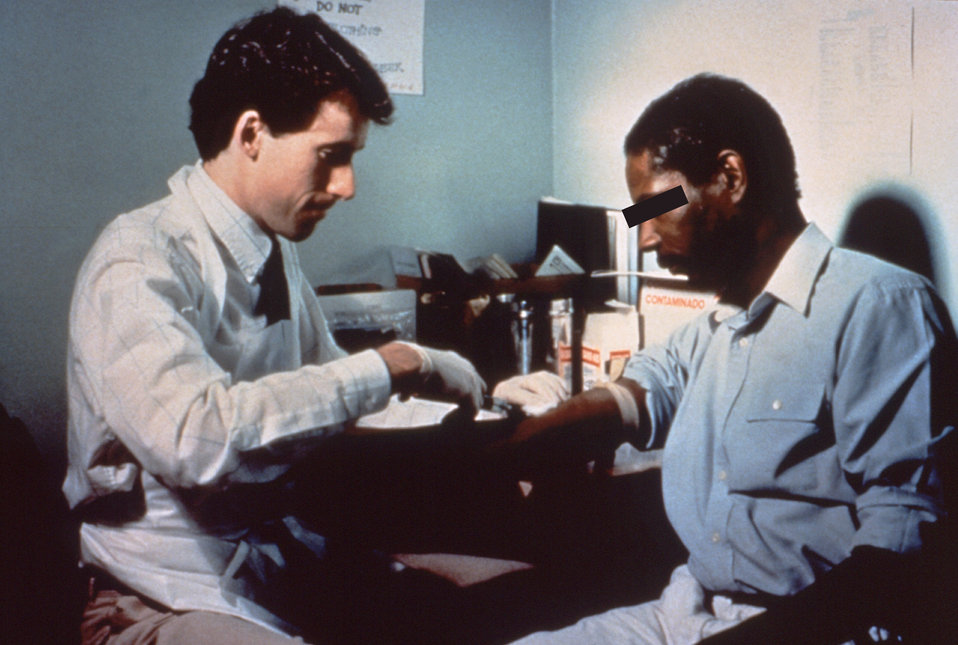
In this photograph, a CDC healthcare practitioner is examining a patient in a local STD clinic.